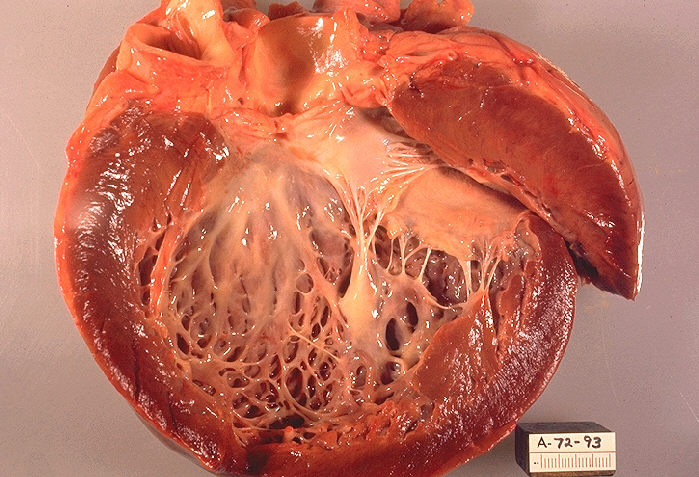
Gross pathology of idiopathic cardiomyopathy.